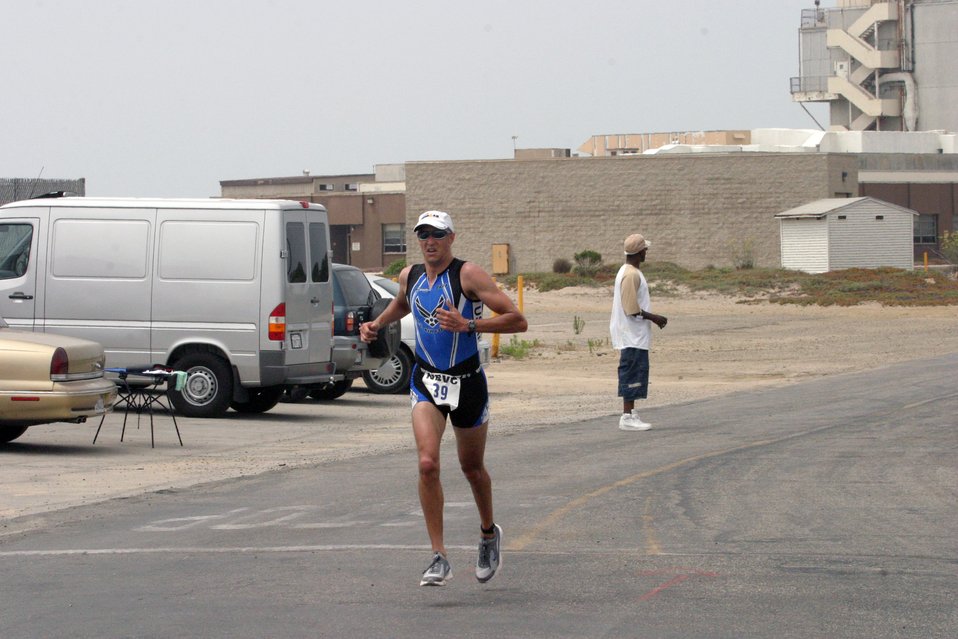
2007 Armed Forces Triathlon Championship

Maj. Peter Ohotnicky pushes through the running event during the 2007 Armed Forces Triathlon Championship at Naval Base Ventura County-Point Mugu, Calif., July 28. Major Ohotnicky, from the U.S. Air Force Academy, Colo., was the second Air Force competitor to finish and came in fifth overall in the men's division.